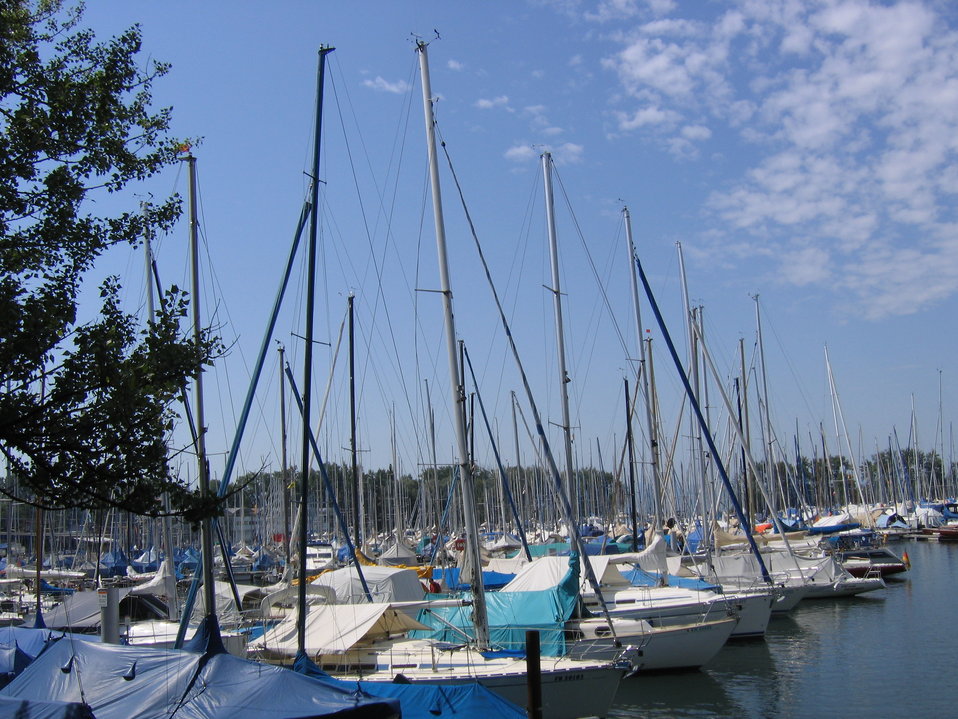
Deutsch: Deutschland - Baden-Württemberg - Bodenseekreis - Kressbronn am Bodensee: Yachthafen Germany - Baden-Württemberg - Bodenseekreis - Kressbronn am Bodensee: harbour